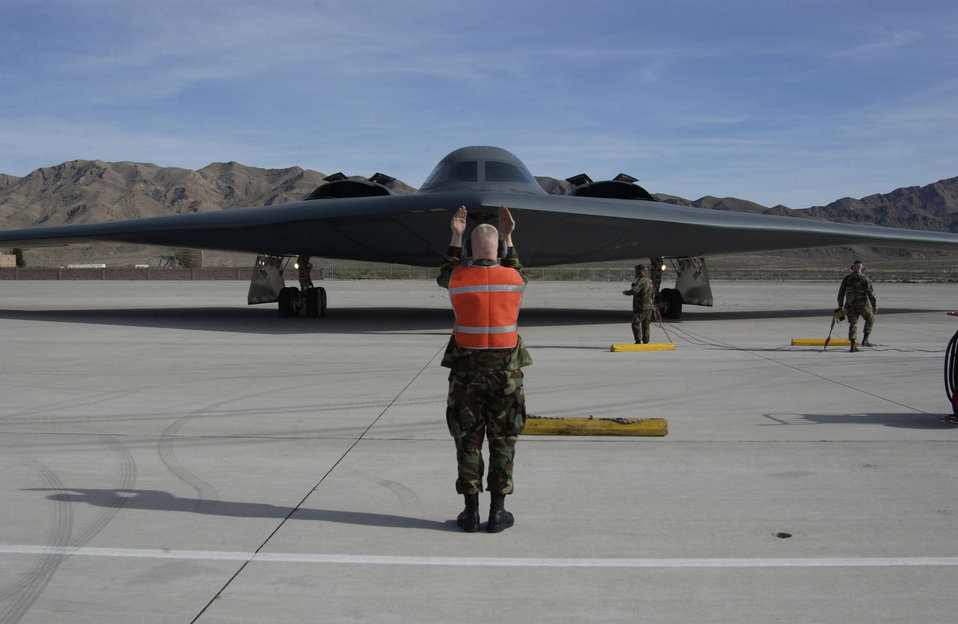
Spirit marshal

NELLIS AIR FORCE BASE, Nev. -- Airman 1st Class Richard Maure marshals in a B-2 Spirit after a Red Flag 2005 mission here March 1. Airman Maure is a crew chief with the 509th Aircraft Maintenance Squadron and the B-2 is assigned to the 509th Bomb Wing at Whiteman AFB, Mo.